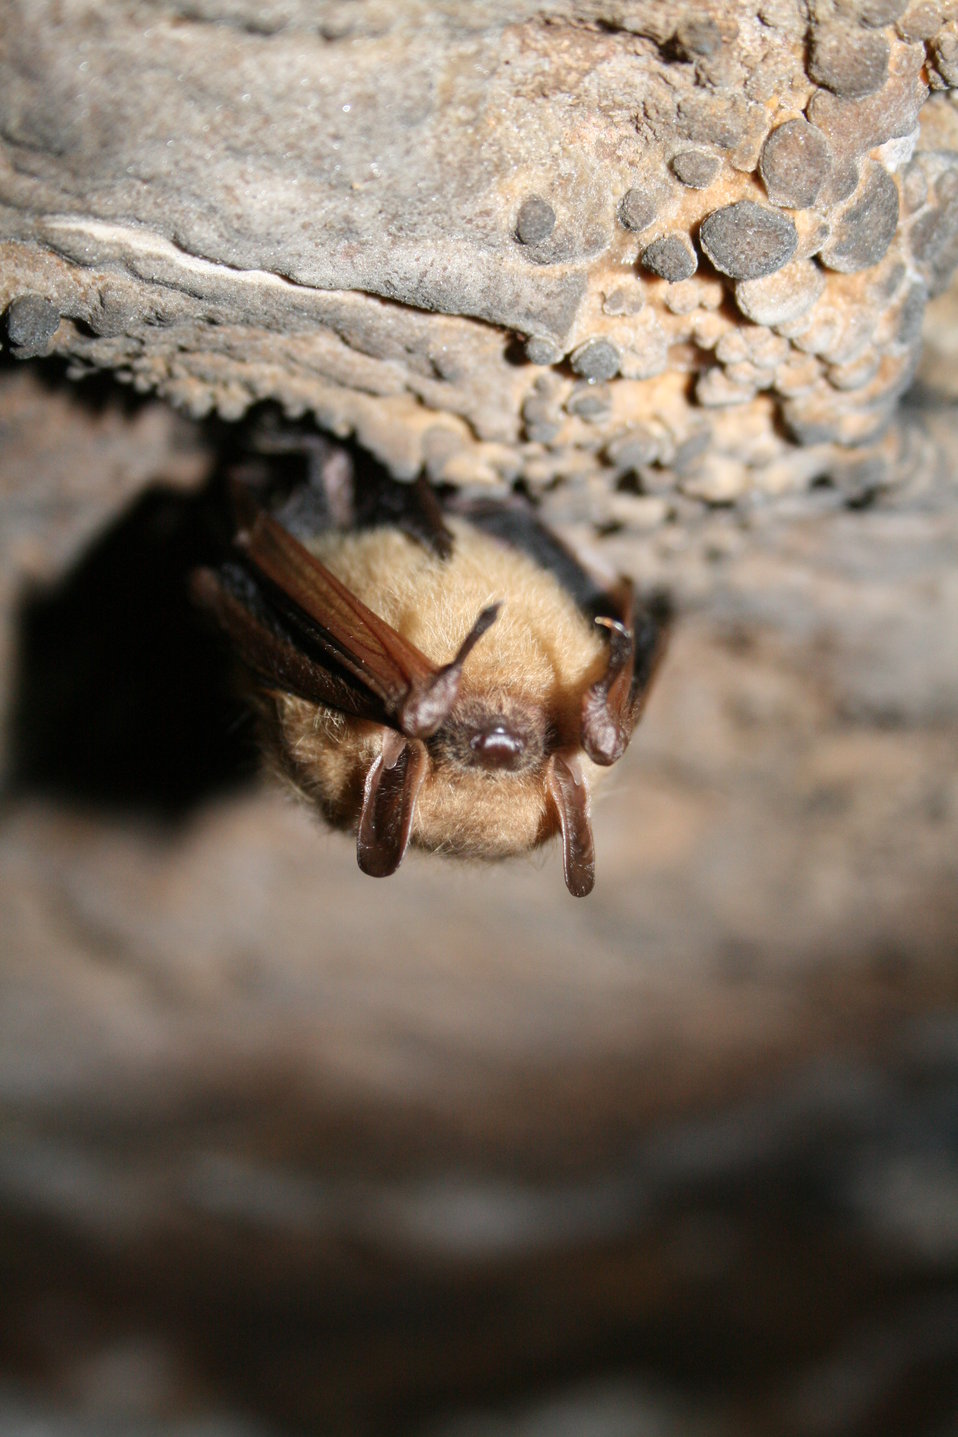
Tri-colored bat